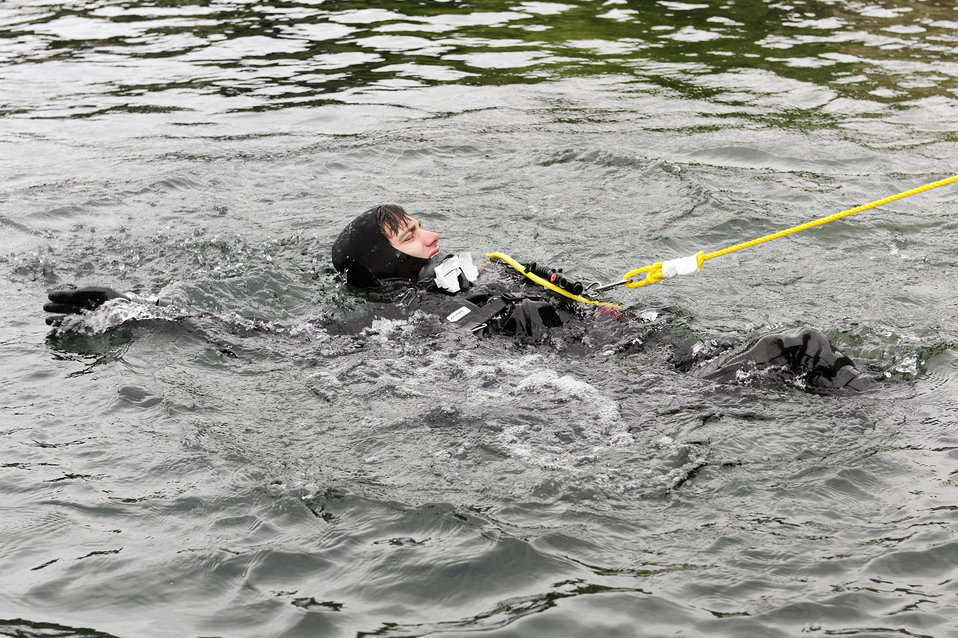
Pararescuemen train to save lives

Senior Airman Eli Reynolds pulls tension on the line while surface swimming to his descent point for subsurface search, rescue and recovery training Oct. 5, 2010, at Stoney Cove, England. Before descending, dive instructors observe the diver for possible bubbles in their air manifolds. Senior Airman Reynolds is a 56th Rescue Squadron pararescueman.